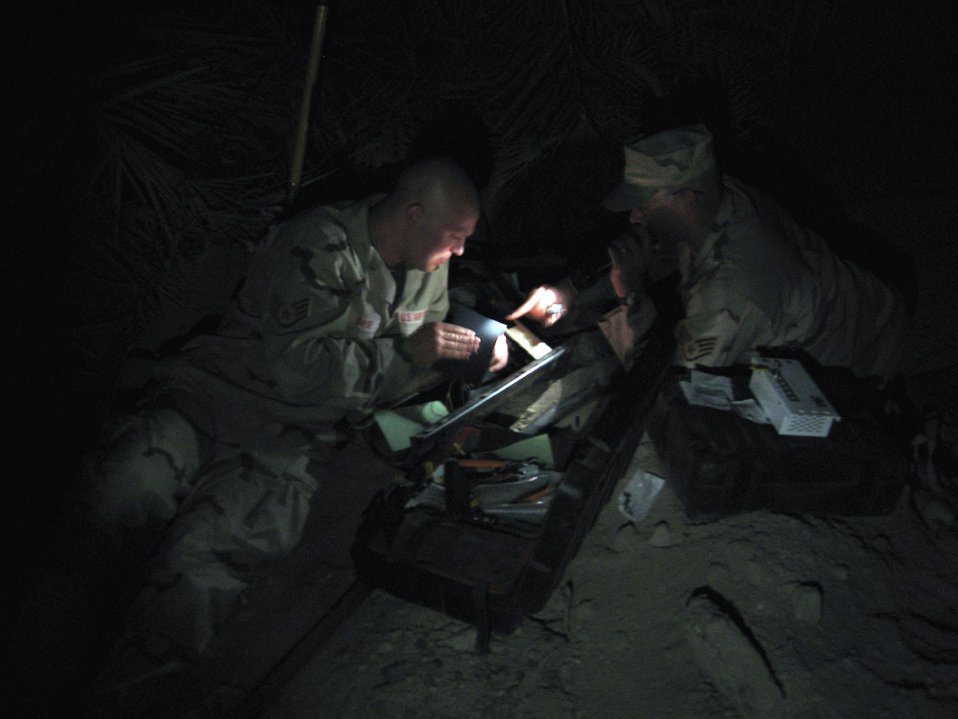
Dawgs get dirty, put PERSCO back online

ALI BASE, Iraq -- Staff Sgts. Gary Sayre (left) and Paul Mattke use a flashlight while working to get the 407th Personnel Support for Contingency Operations section's communications back online. They are assigned to the 407th Expeditionary Communications Squadron. Sergeant Sayer is deployed from McChord Air Force Base, Wash., and Sergeant Mattke is deployed from Ellsworth AFB, S.D.